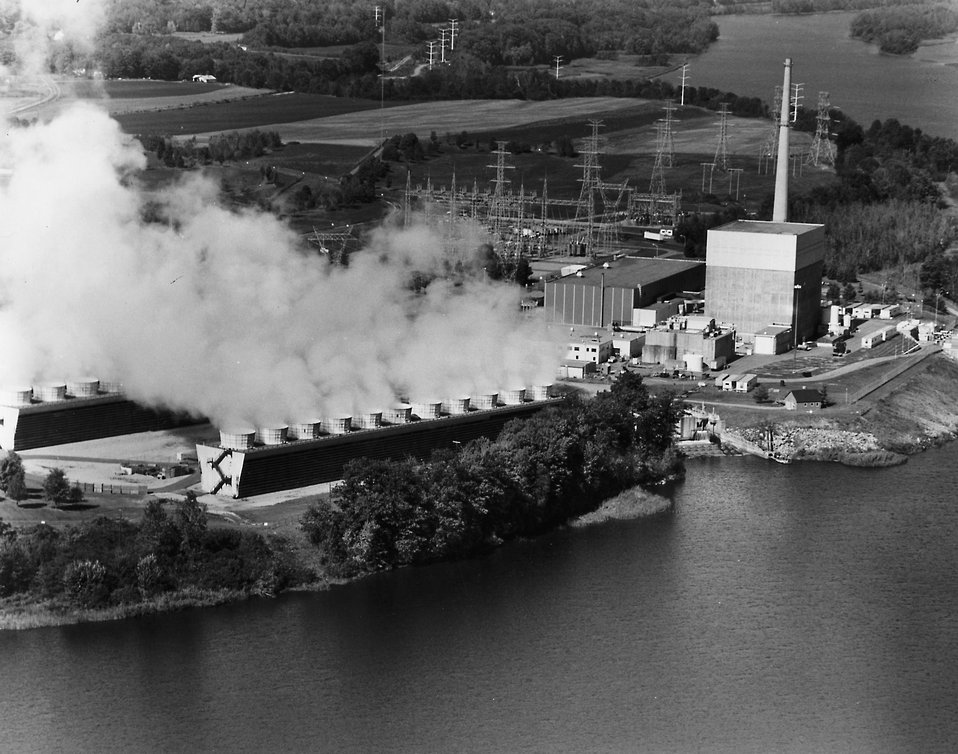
Vermont Yankee Nuclear Power Plant- Vernon Vermont.